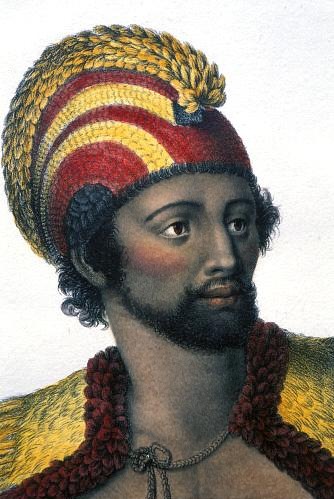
A colored portrait based on the Portrait of Kaneena, a chief of the Sandwich Islands in the North Pacific by John Webber. The actual spelling is Kanaina, and he was one of the two chiefs along with Palea (Pareea) who were the first to greet Captain James Cook at Kealakekua Bay. Described as fine as 'a figure as can be seen. He was about six feet high, had regular and expressive features, with lively dark eyes; his deportment was easy, firm, and graceful.' According to Abraham Fornander he is possibly the person who struck the fatal blow that ended James Cook's life; he called him Kalanimanokahoowaha. According to another source he was one of the chiefs that died in the fighting.